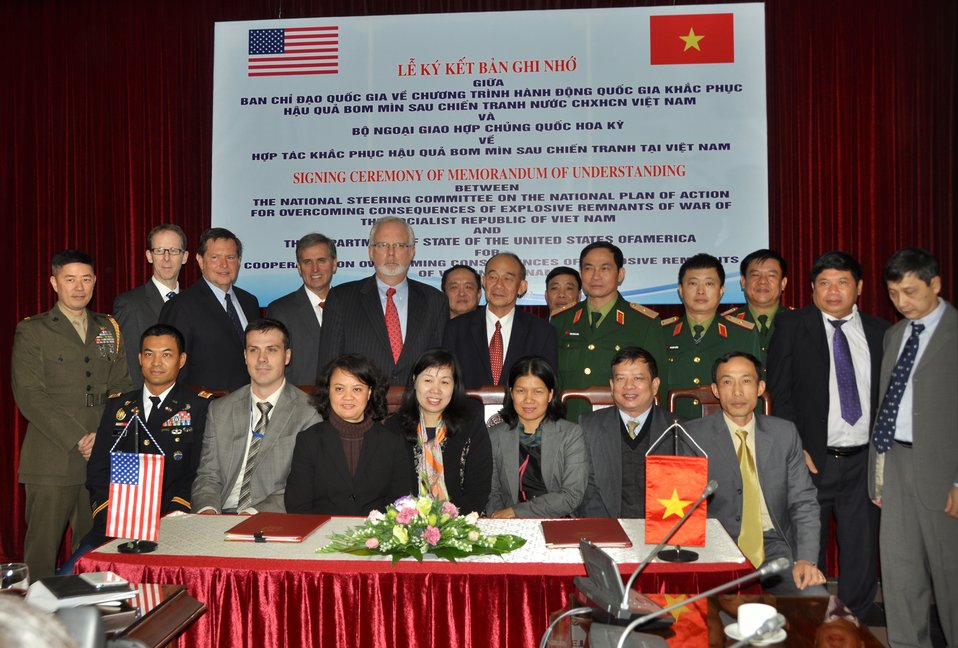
The United States and Vietnam sign an MOU on unexploded ordnance (UXO) cooperation

Hanoi, December 16, 2013.